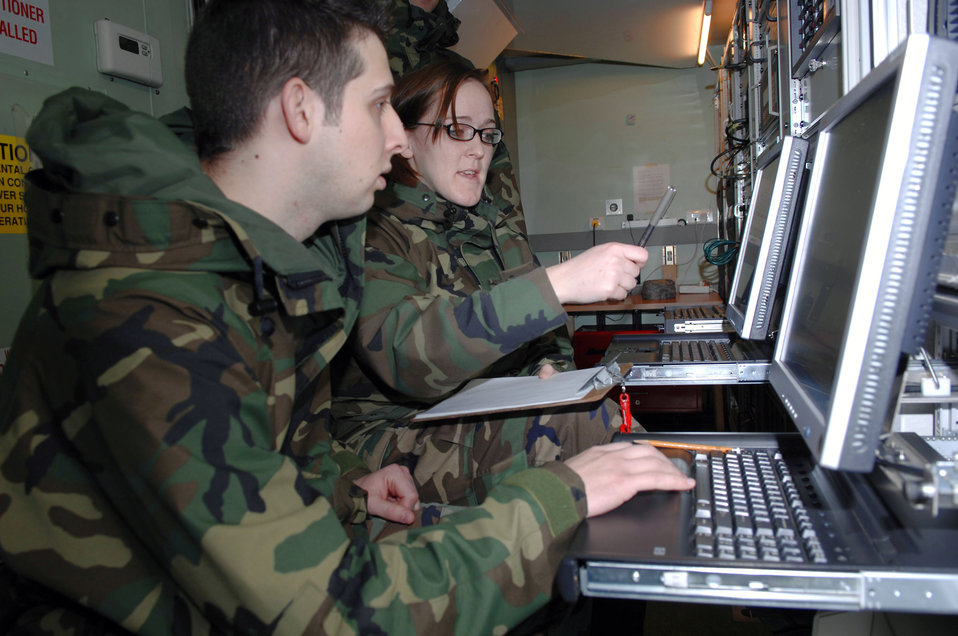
Ramstein team gives planners Eagle Vision

Staff Sgt. Susanne Dehne teaches Airman 1st Class Mike Frimel how to program the Eagle Vision-1 antenna's pass plan to view various commercial satellites in order to download images of areas of interest Feb. 29 at Ramstein Air Base, Germany. Sergeant Dehne is a commercial satellite imagery collections manager and Airman Frimel is ground station controller.